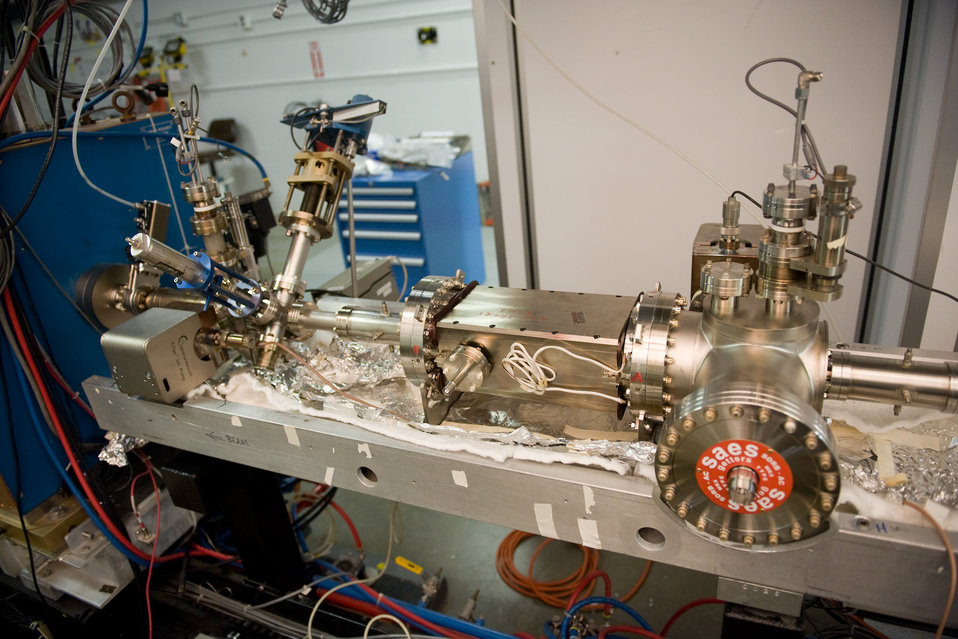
SHOWN IS AN INJECTOR AT THOMAS JEFFERSON NATIONAL ACCELERATOR FACILITY.

The Jefferson lab is built for nuclear physics research. Scientists use superconducting electron accelerating technology at the lab's Continuous Electron Beam Accelerator Facility (CEBAF) to conduct experiments. High energy electron beams from the accelerator allows scientists to probe the atoms nuclear, reveling how quarks make up protons, neutrons, and the nucleus itself.